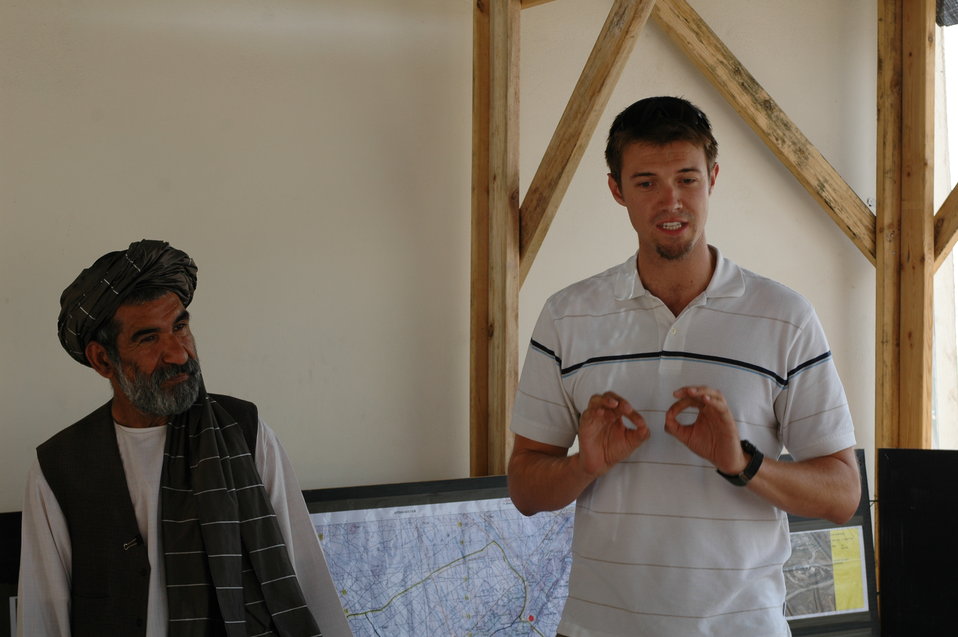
CODEL Berman